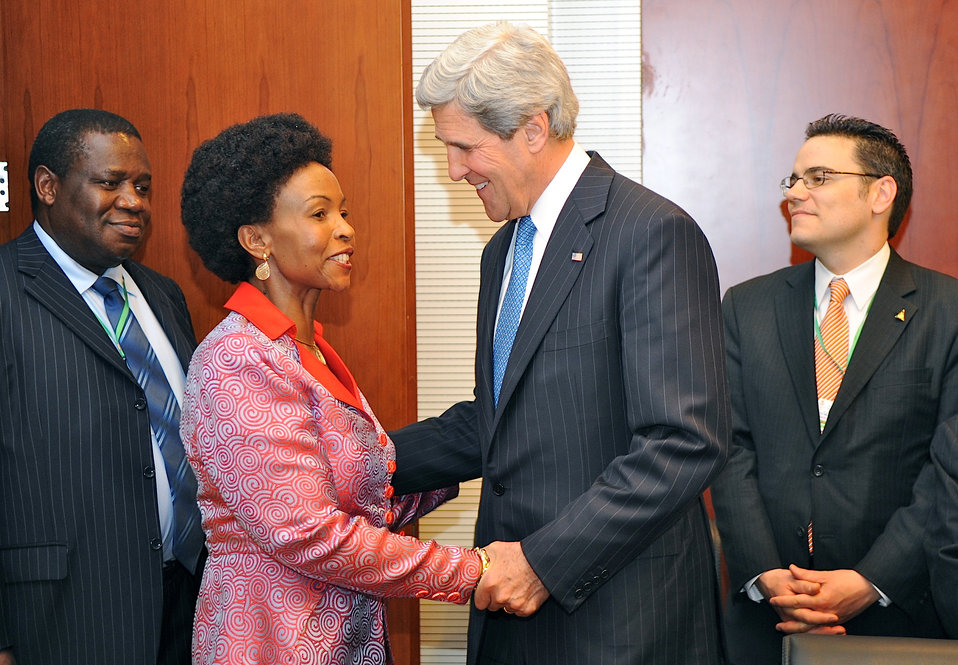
Secretary Kerry Meets With South African Foreign Minister Nkoana-Mashabane

U.S. Secretary of State John Kerry meets with South African Foreign Minister Maite Nkoana-Mashabane during a break at the 50th anniversary African Union Summit in Addis Ababa, Ethiopia, on May 25, 2013.